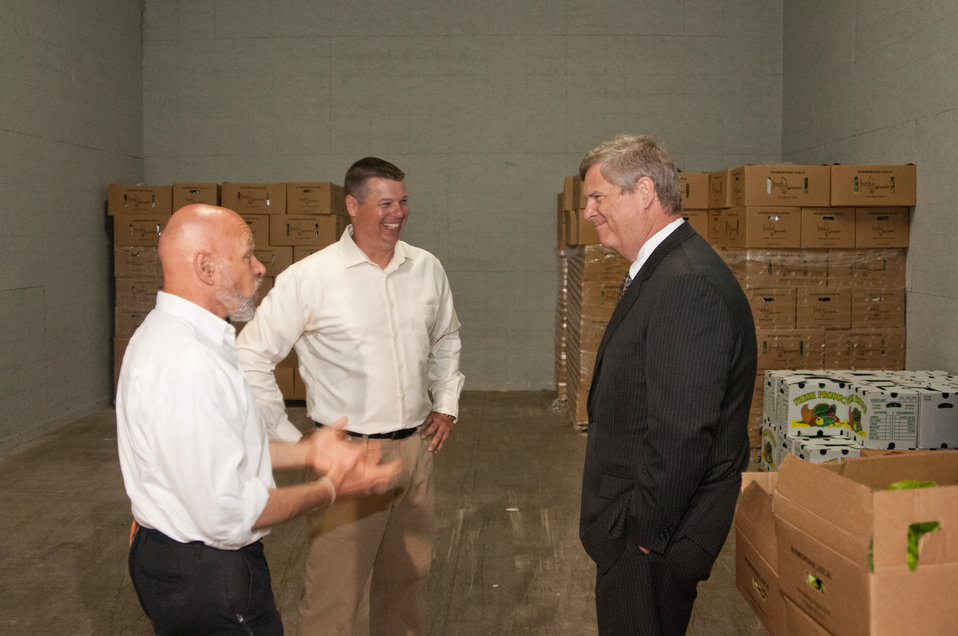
Agriculture Secretary Tom Vilsack visits Blue Ridge Produce in Elkwood, VA on Thursday, May 30, 2013. Blue Ridge Produce is a local food hub aggregating Virginia-grown fruits and vegetables for sale to wholesale customers in the Capitol region. Blue Ridge strives to build a value-based relationship with Virginia growers of all sizes by handling the marketing and logistics to get their produce from farm to customer. (L to R Blue Ridge Produce Jim Epstein, Blue Ridge Produce Mark Seale, and Agriculture Secretary Tom Vilsack).